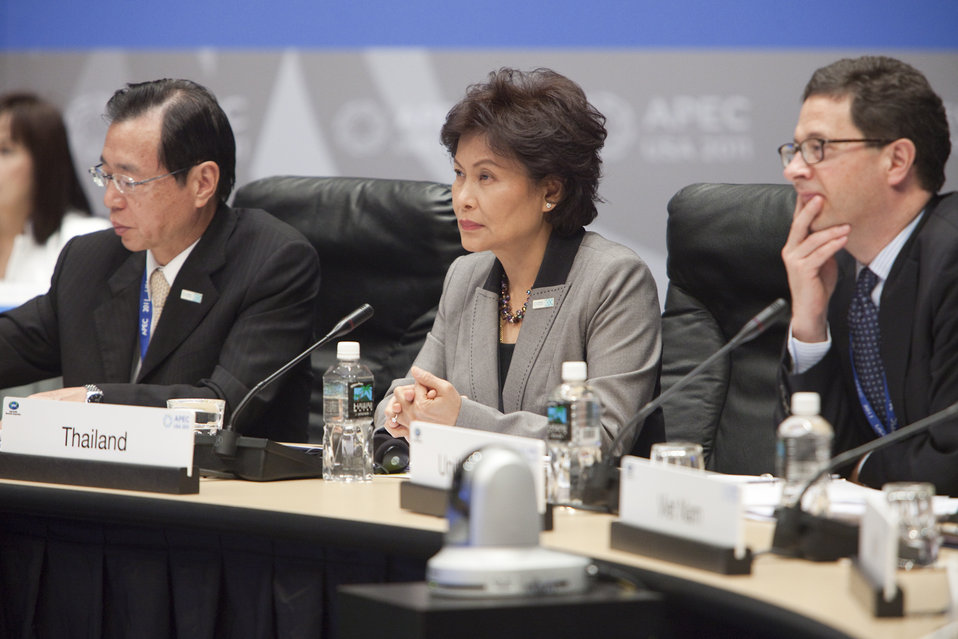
APEC Meeting of Finance Ministers

Taiwan's Minister of Finance Lee Sush-der, Inspector General of Thailand’s Ministry of Finance Chularat Suteethorn, and Assistant Secretary of the Treasury for International Finance Charles Collyns attended a working session during a meeting of APEC's finance ministers.